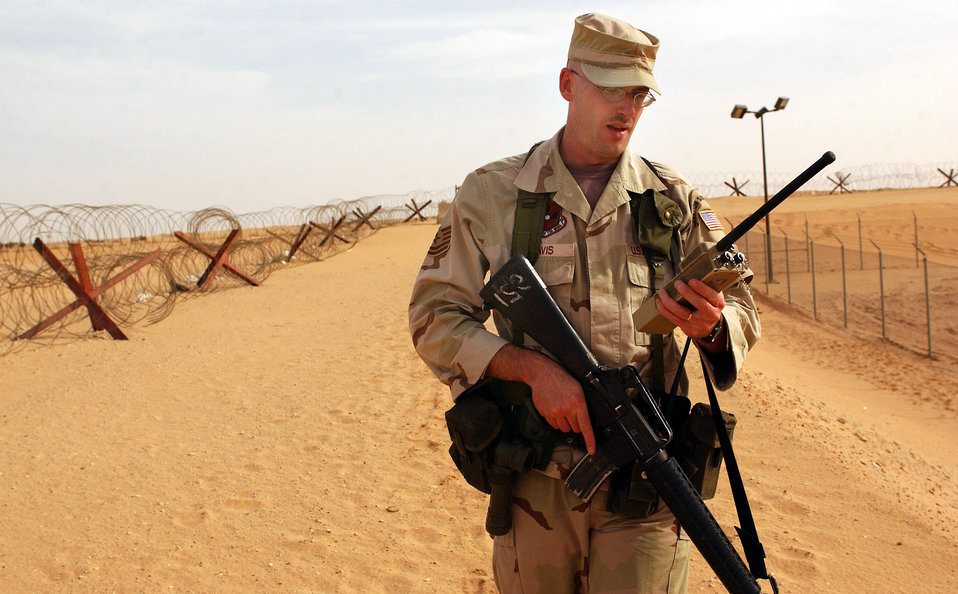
Along the fence line

OPERATION IRAQI FREEDOM -- Tech. Sgt. Doug Davis, a security forces craftsman deployed from the 301st Security Forces Squadron, Carswell Air Reserve Station, Fort Worth, Texas to the 363rd Expeditionary Security Forces Squadron, checks a Tactical Automated Sensor System protecting a fence line while on guard duty April 3. The 363rd ESFS members work around the clock performing force protection measures, air base defense, and protecting personnel in support of Operation Iraqi Freedom at a forward deployed location in Southwest Asia.